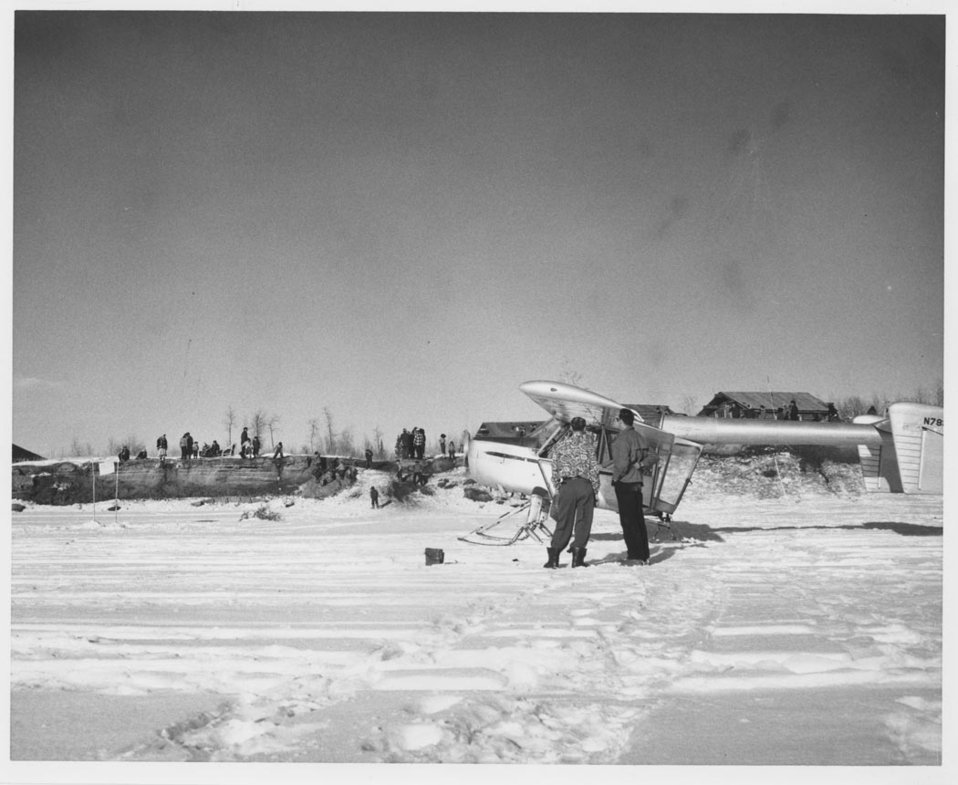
Agent Jim King with small plane at Minto Flats